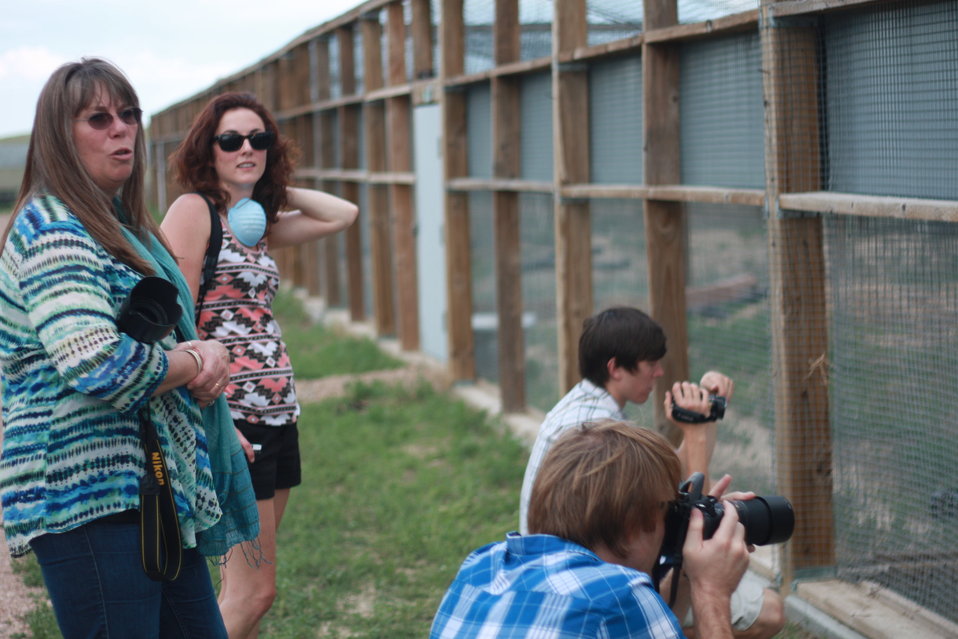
Interns visit the NBFFCC

In the summer of 2012, USFWS Region 6 interns visited the National Black-footed Ferret Conservation Center (NBFFCC) in Colorado to learn how the program reintroduces the endangered Black-footed ferret back into its native habitat.

In this photo, Kimberly Tamkun (NBFFCC Administrative Assistant/Education) shows the outdoor preconditioning pens to Ryan and the interns.